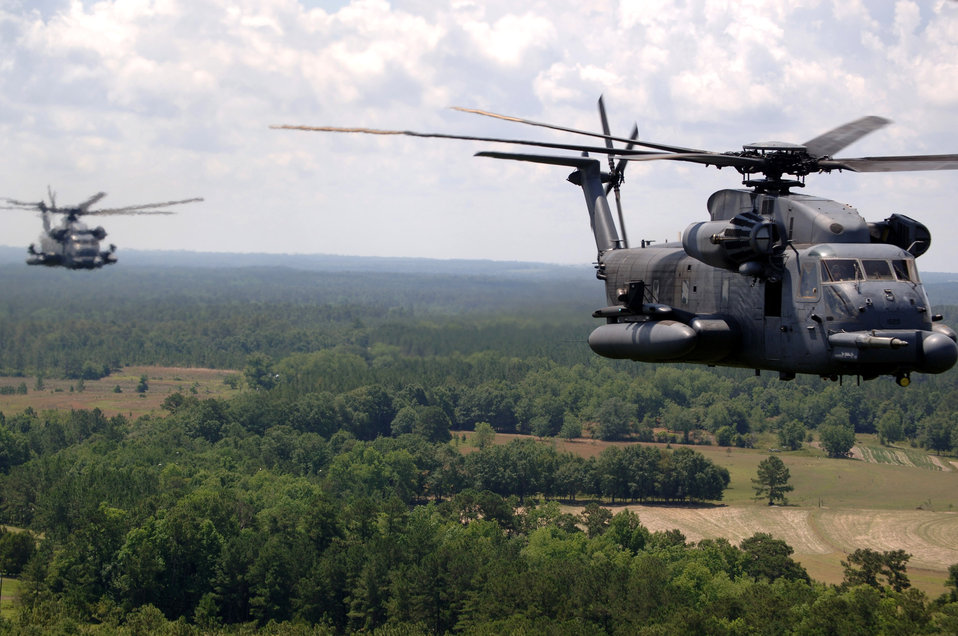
Fly high, pave low

A group of MH-53 Pave Low helicopters from the 20th Special Operations Squadron at Hurlburt Field, Fla., fly over a live-fire range June 12 at Eglin Air Force Base, Fla. The medium-lift helicopter is the largest, most powerful and technologically advanced helicopter in the Air Force inventory.